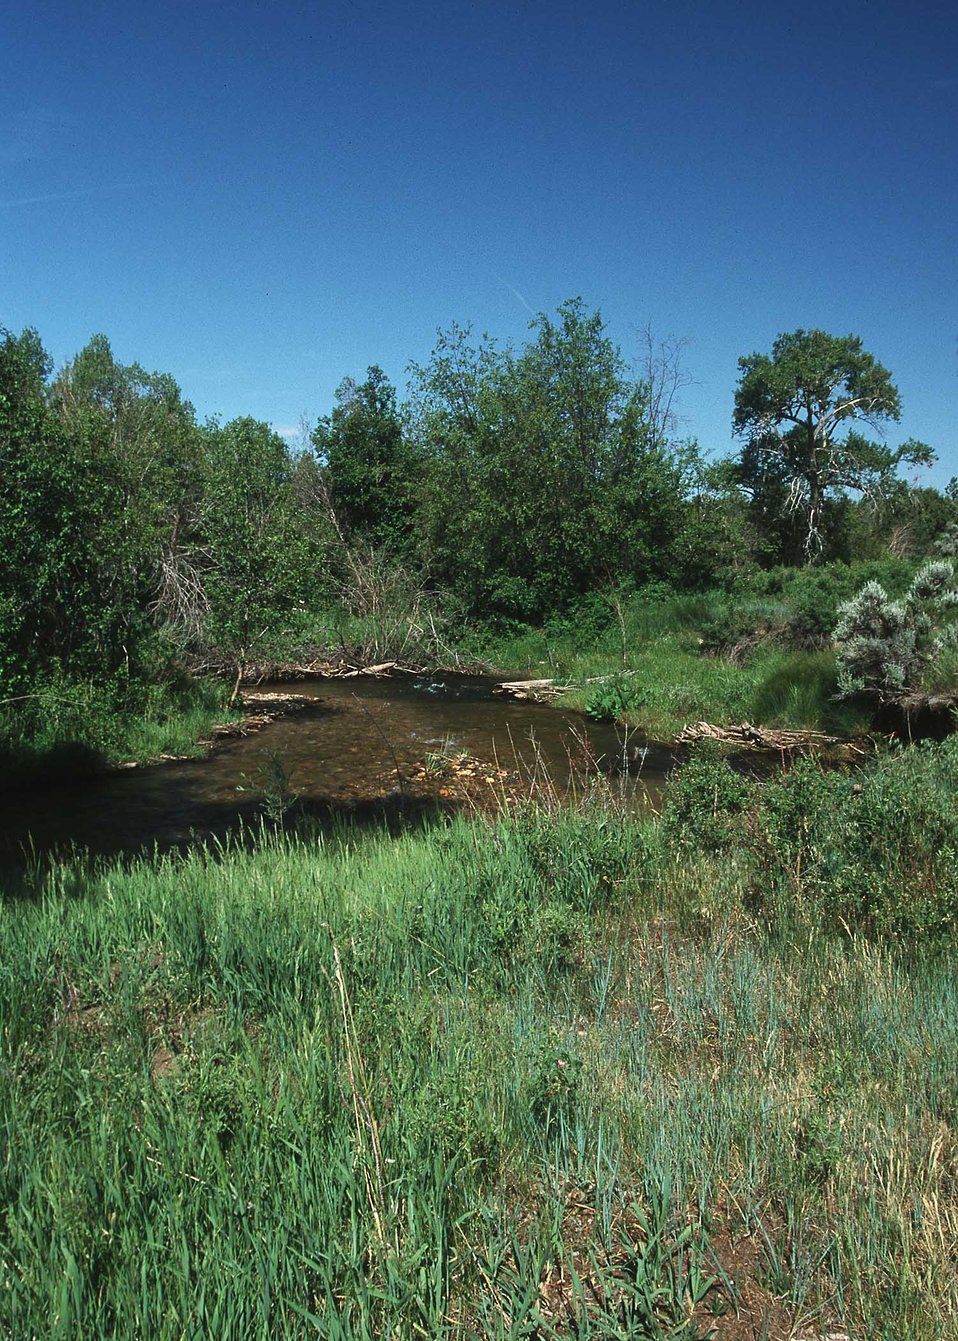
Sandgre de Cristo Creek, FT Ranch.